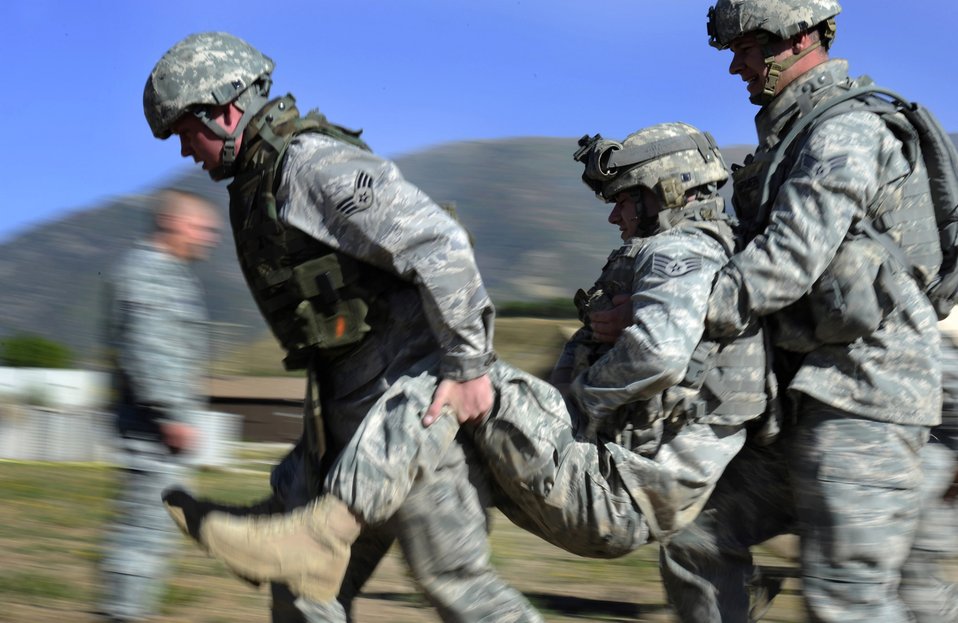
He's not heavy

Airmen use a two-man buddy carry to transport a